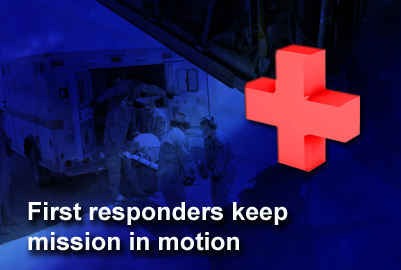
Air Force first responders, first on scene to keep missions in motion

Air Force officials emphasized that first responders - security forces, fire emergency services and emergency medical services - make up the essential elements necessary to protect people and assets.